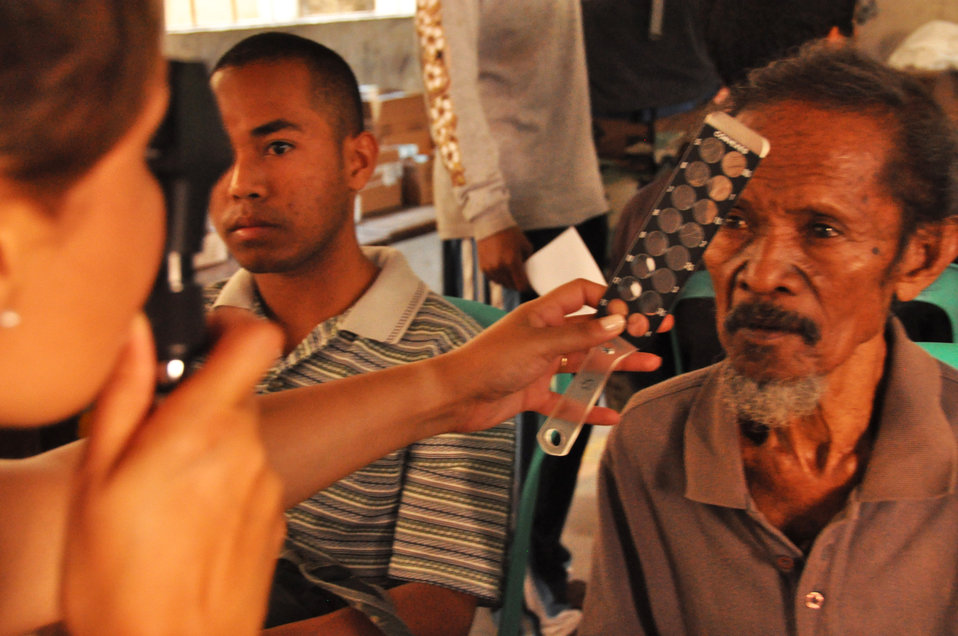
Airmen help hundreds in Timor Leste

An East Timorese man has his eyes examined during inprocessing at a clinic July 16 in Dili, Timor Leste. East Timorese and U.S. officials set up the clinic as part of Operation Pacific Angel 2009, a Pacific Air Forces humanitarian assistance operation led by 13th Air Force at Hickam Air Force Base, Hawaii.